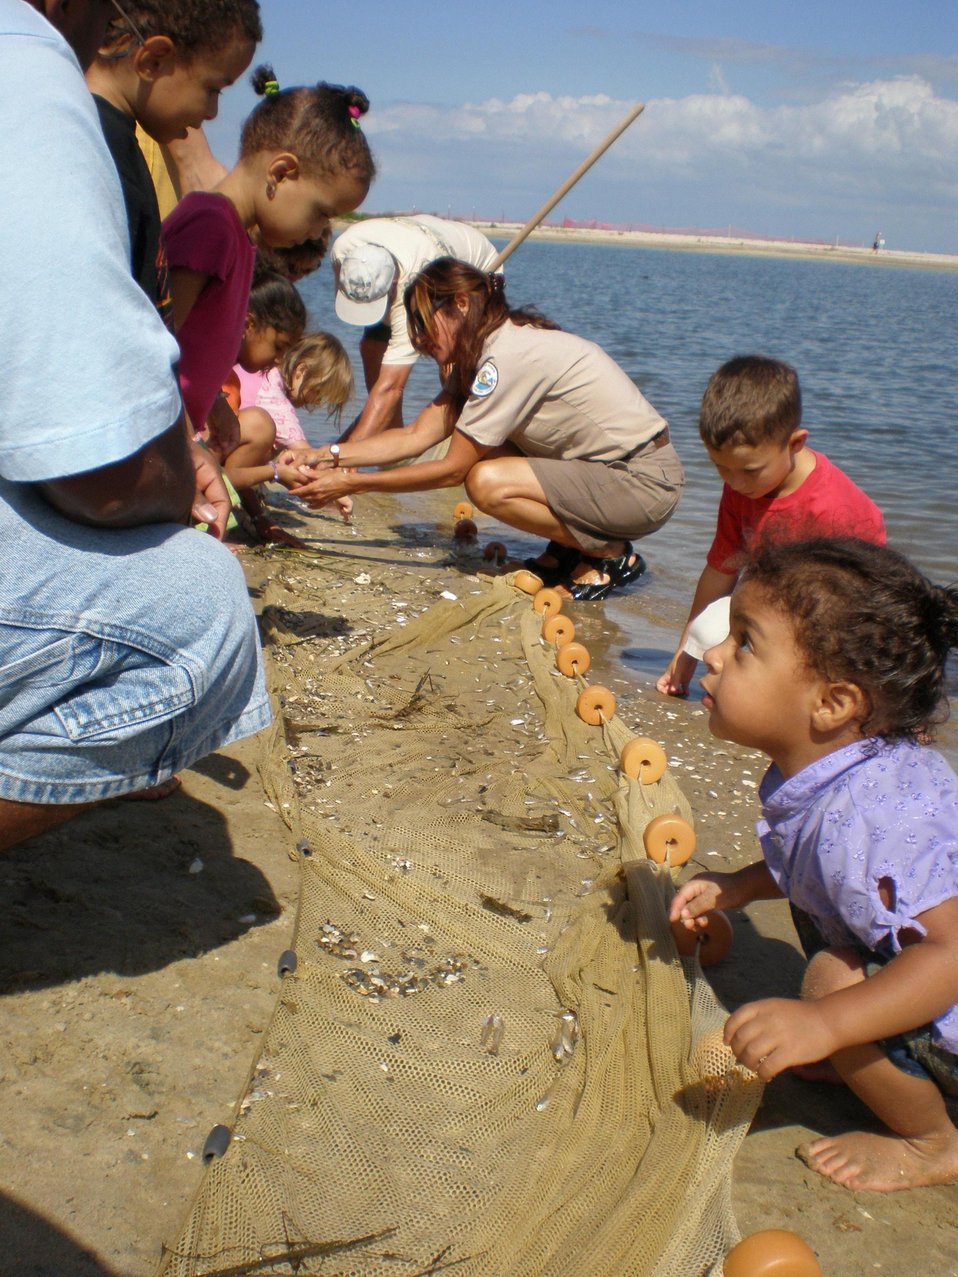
Children learn about the treasures of Chesapeake Bay at Flag Pond Nature Park.